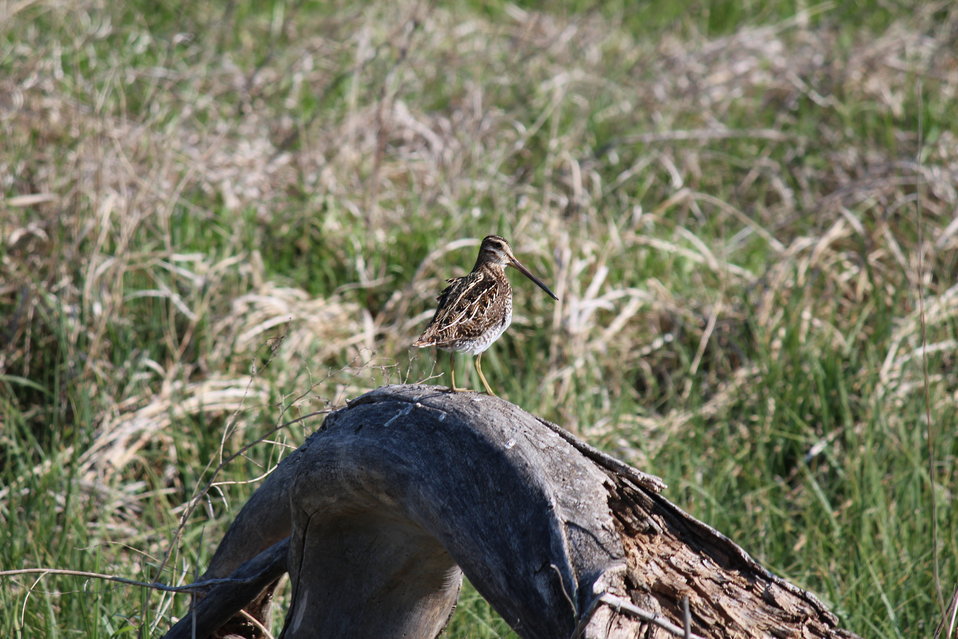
Common Snipe On Old Log

This Common Snipe was making himself known from his perch in the prairie.

Location: Long Lake WMD, Burleigh County, North Dakota

Credit: Doug Mosser / USFWS

Photo Contest Entry #167